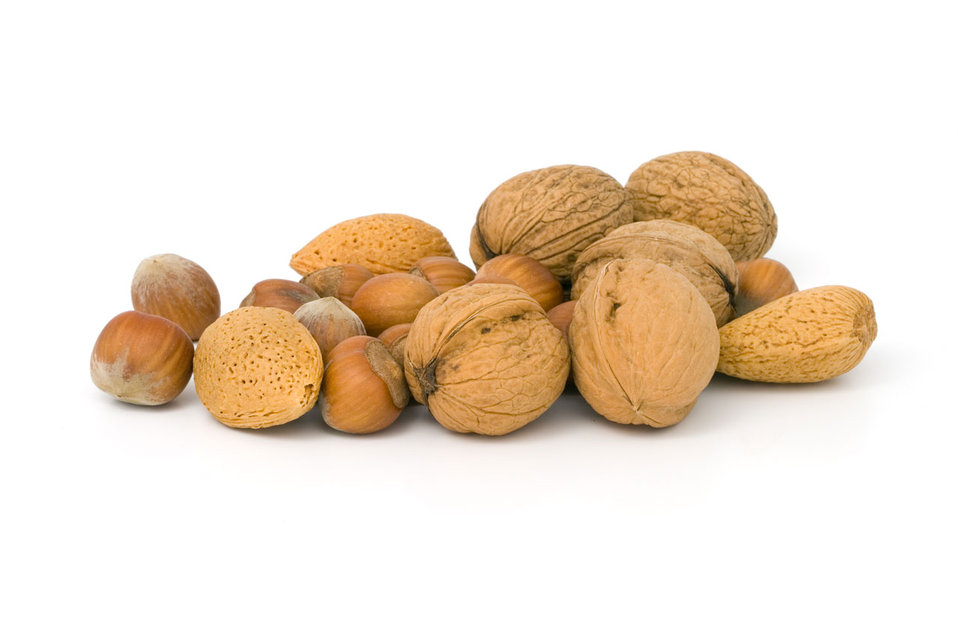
Nuts

Various nuts including hazelnuts, walnuts and almond.